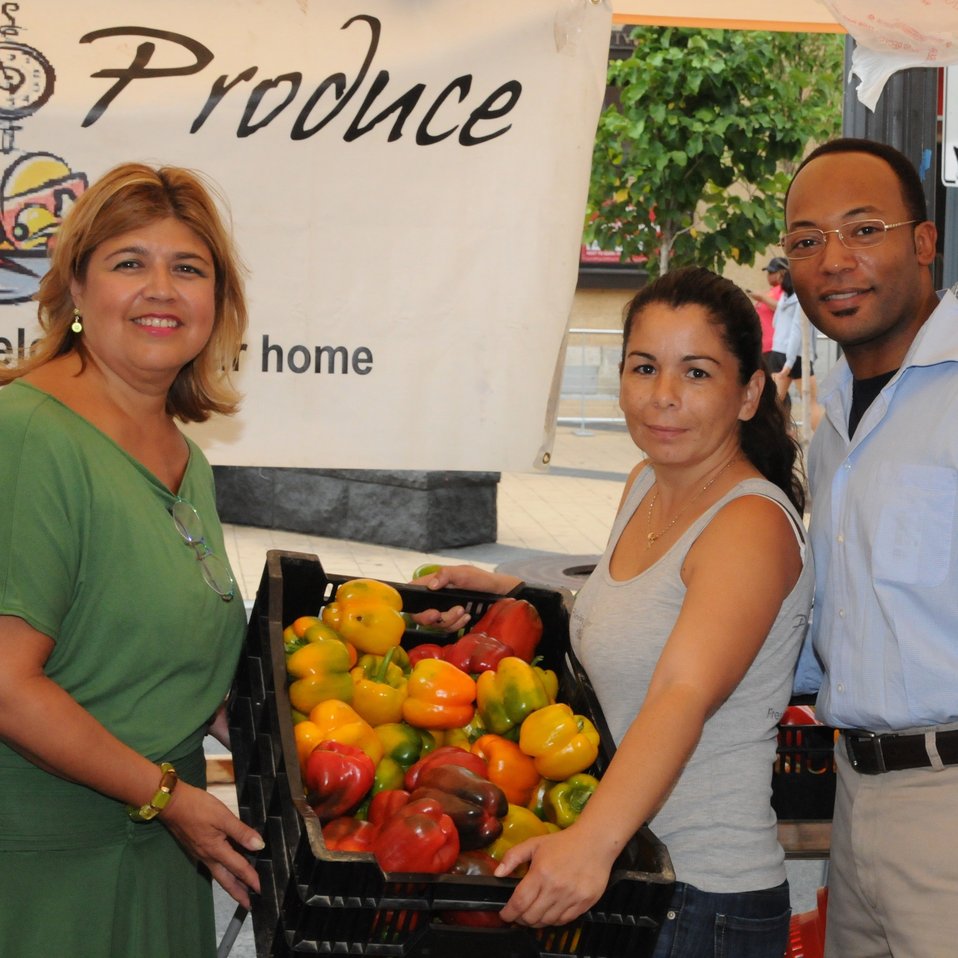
Anne, Arthur, Wholesome Wave Co-Founder Gus Schumaker, Vendor Astrid Pleitez

AMS Administrator Anne Alonzo holds a basket of produce with vendor Atrid Pleitez, AMS Deputy Administrator Arthur Neal and Wholesome Wave co-founder, Gus Schumaker at a National Farmers Market Week kick-off event. The event was held at the Columbia Heights Community Marketplace in Washington, D.C.